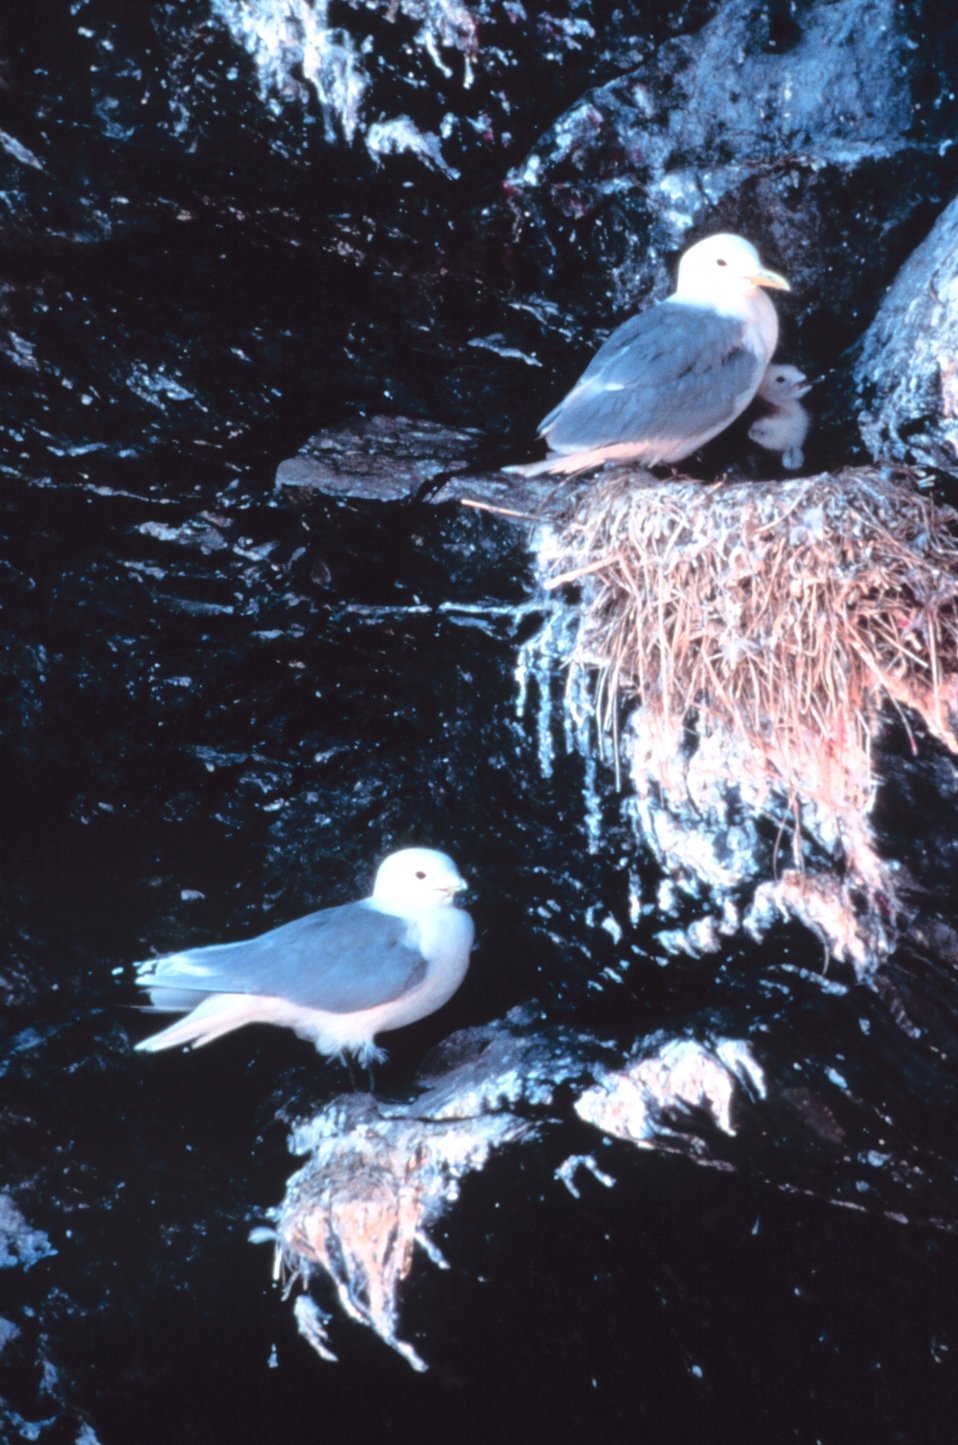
Black-legged kittiwakes with chick